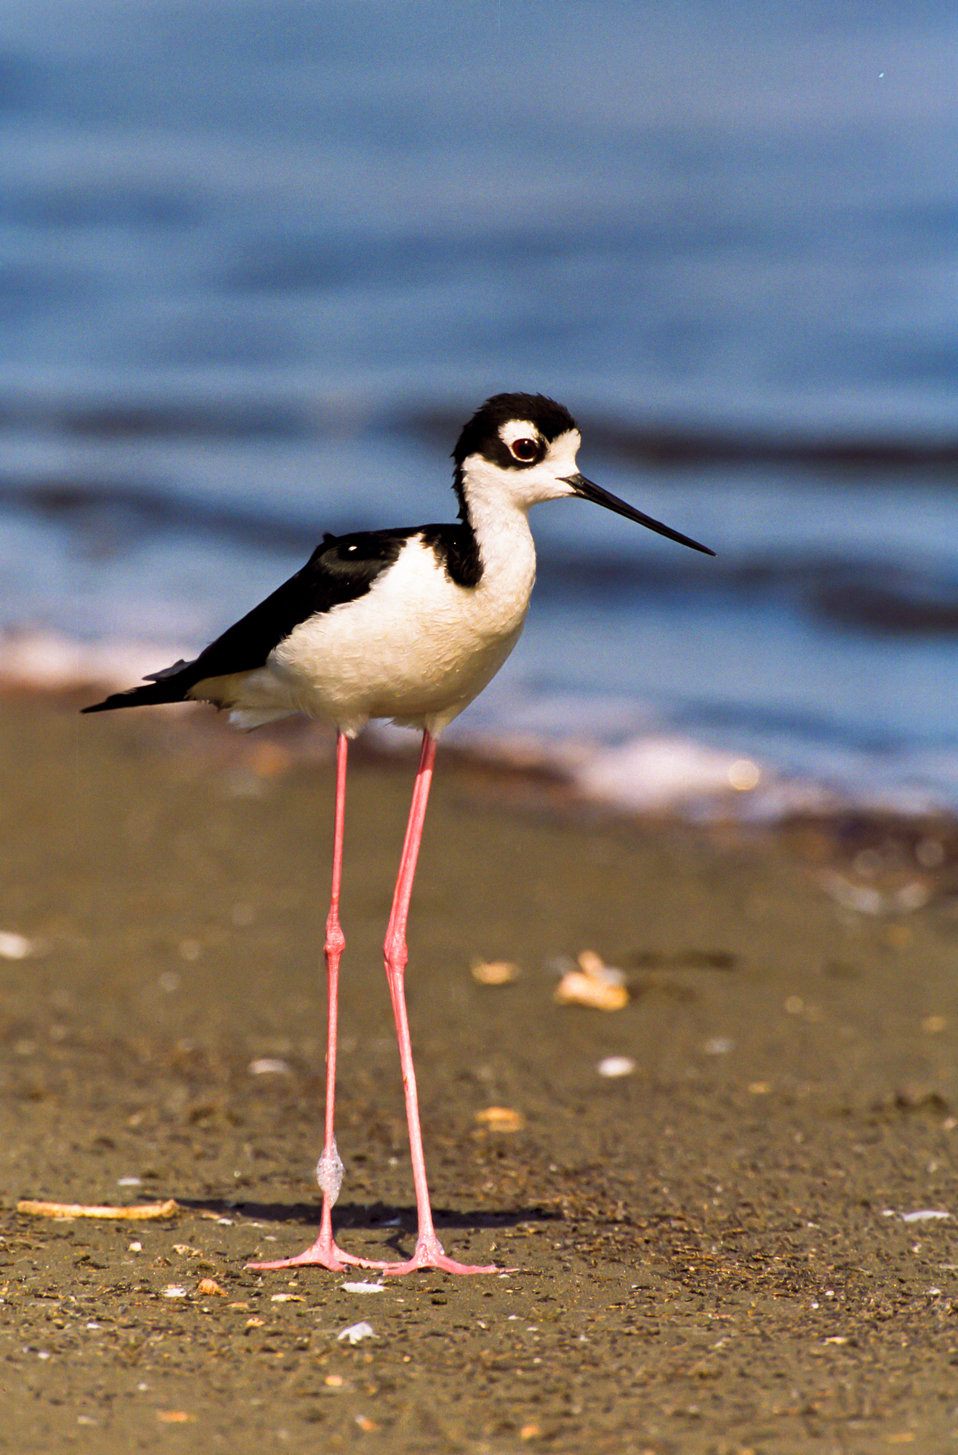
There's a great reason why they are called 'stilts'

Black-necked stilts walk delicately, and tilt forward to pick food with a needle-like bill. It's voice is unmistakable - a loud sharp 'pleek' or 'keef'; often repeatedly